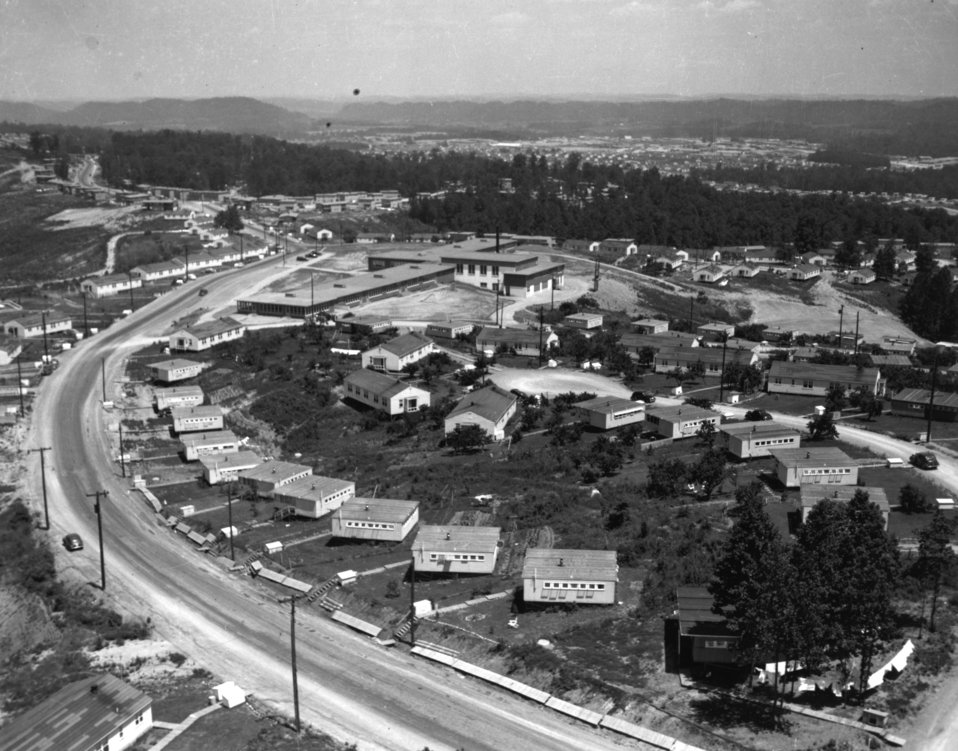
Aerial of Oak Ridge